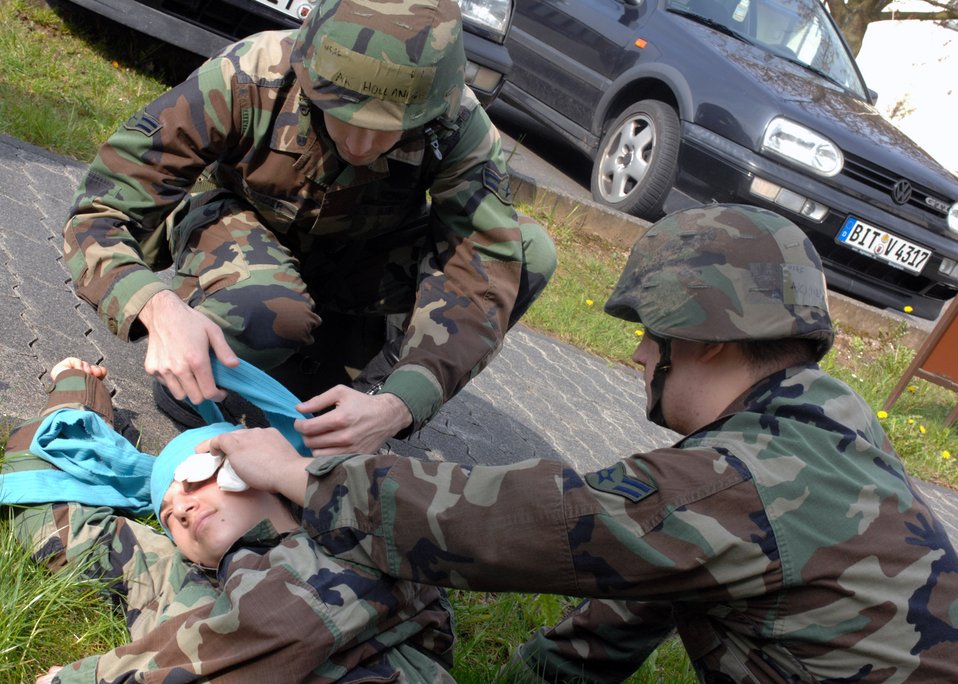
Operation Saber Crown 08-06 -- Ready to save lives, defend the base

Airman 1st Class Johnathan Hollander and Airman 1st Class Justin Holmes, assist a victim during Operation Saber Crown 08-06 April 22. Airmen Hollander and Holmes are both from the 52nd Maintenance Operations Squadron.